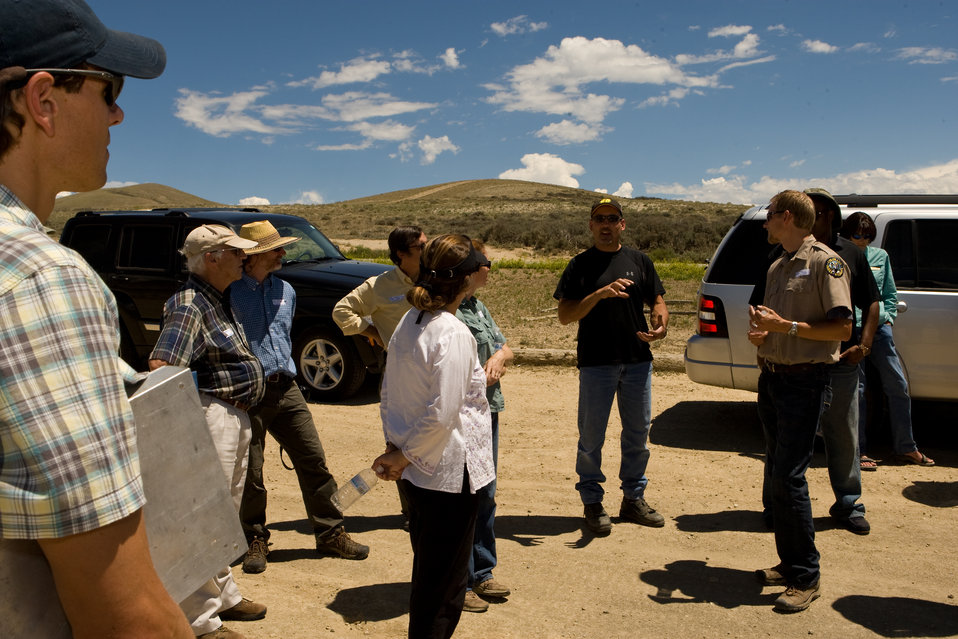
Colorado Rare Plant Conservation Initiative

The Colorado Rare Plant Conservation Initiative (RPCI) is a partnership of 23 statewide and regional agencies, private organizations, and academic institutions working to conserve 121 rare plants in Colorado. As part of these efforts the group developed the Colorado Rare Plant Conservation Strategy, developed Best Management Practices to reduce energy development impacts, addressed climate change, and developed focused strategies for the conservation of individual species at eight priority landscapes. The group has also worked to coordinate volunteer efforts for plant conservation across the state.